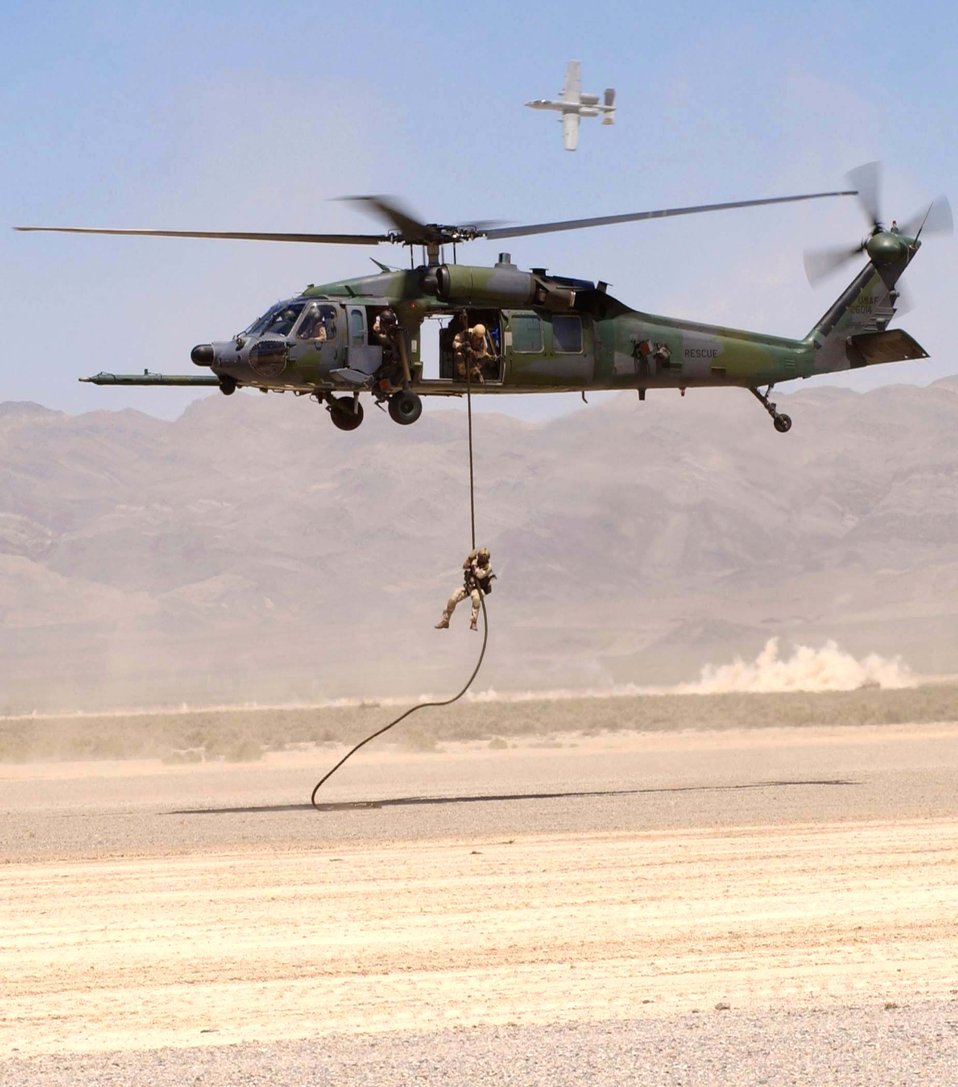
Firepower demo

NELLIS AIR FORCE BASE, Nev. -- An Airmen of the 66th Rescue Squadron rappels from an HH-60G Pave Hawk helicopter as A-10 Thunderbolt IIs lay cover fire during an Air Force firepower demonstration near here May 12. The demonstration showcases the Air Force's air and space capabilities.